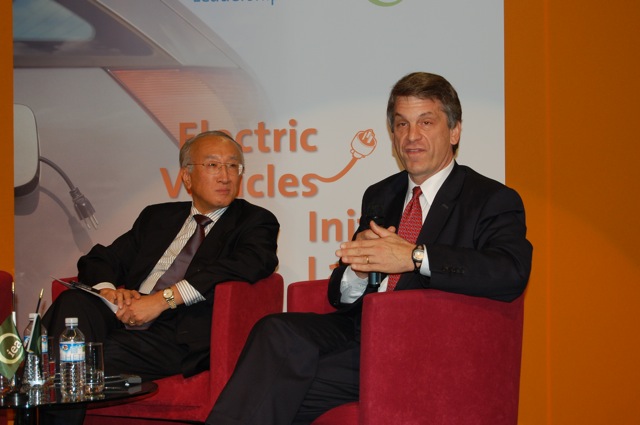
David Sandalow at the Paris Auto Show